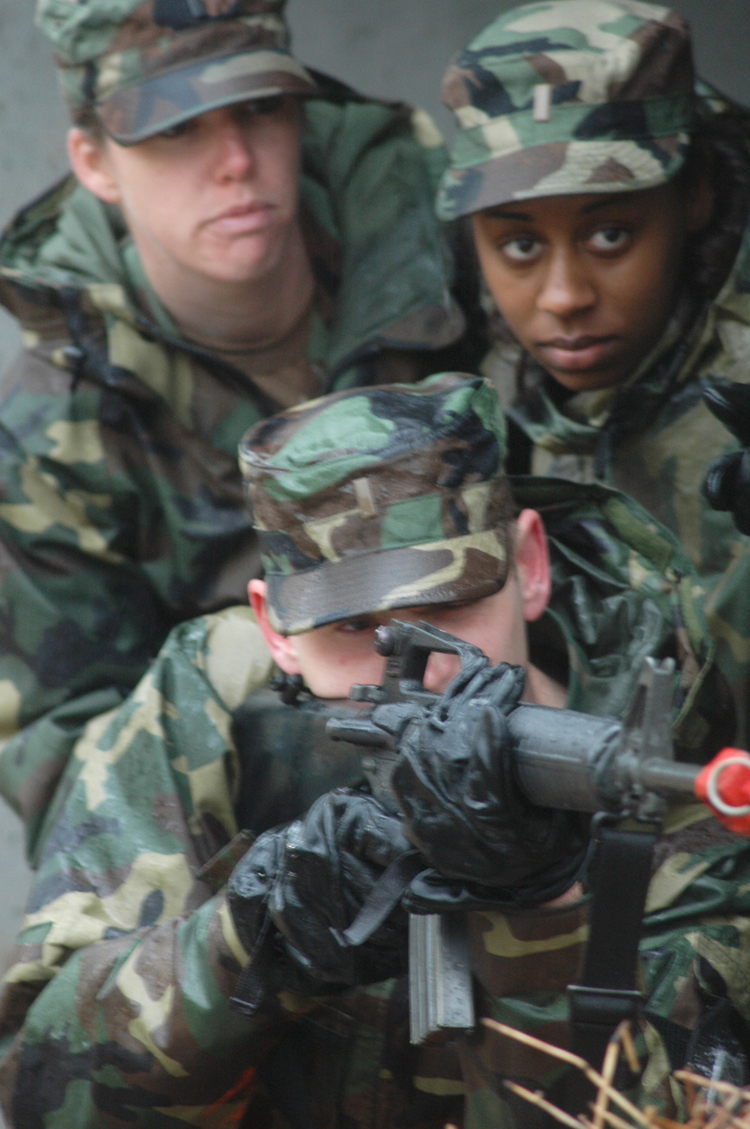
Practice makes perfect

ROBINS AIR FORCE BASE, Ga. -- (Clockwise from top left) 1st Lt. Ann Walsh and 2nd Lts. Nicole Romer and Steve Toebben gear up for a training exercise here recently. The exercise measures the overall effectiveness of servicemembers to perform technical and survival skills in combat environments.